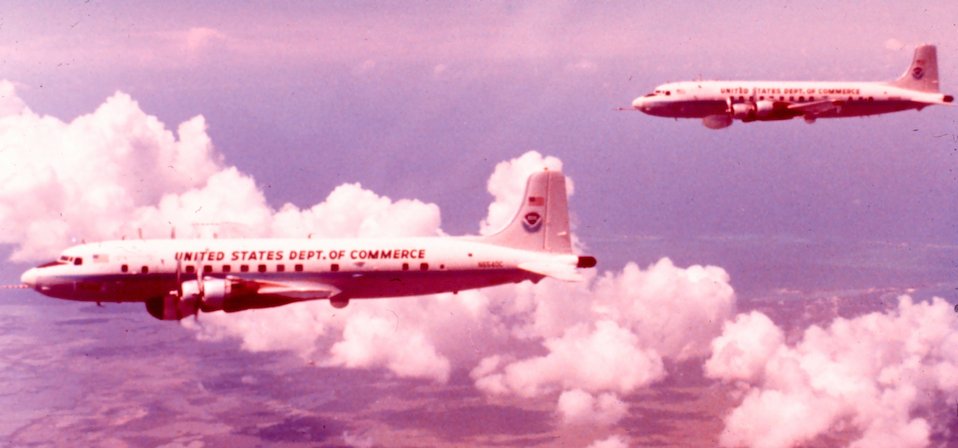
NOAA DC-6 N6540C in flight.